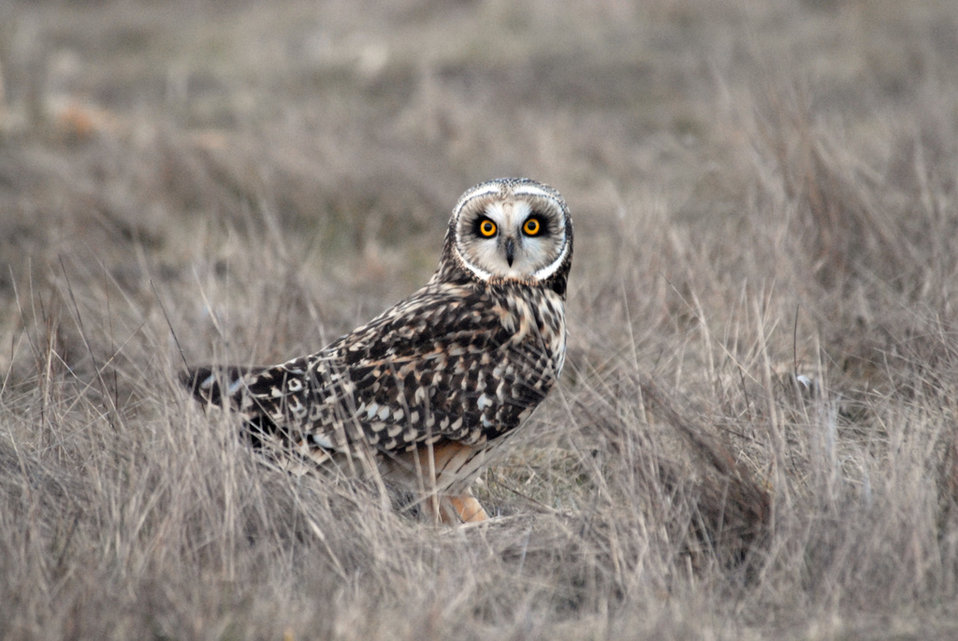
short-eared owl

This short-eared owl was photographed Jan. 7, 2012 at WA's Ridgefield National Wildlife Refuge.